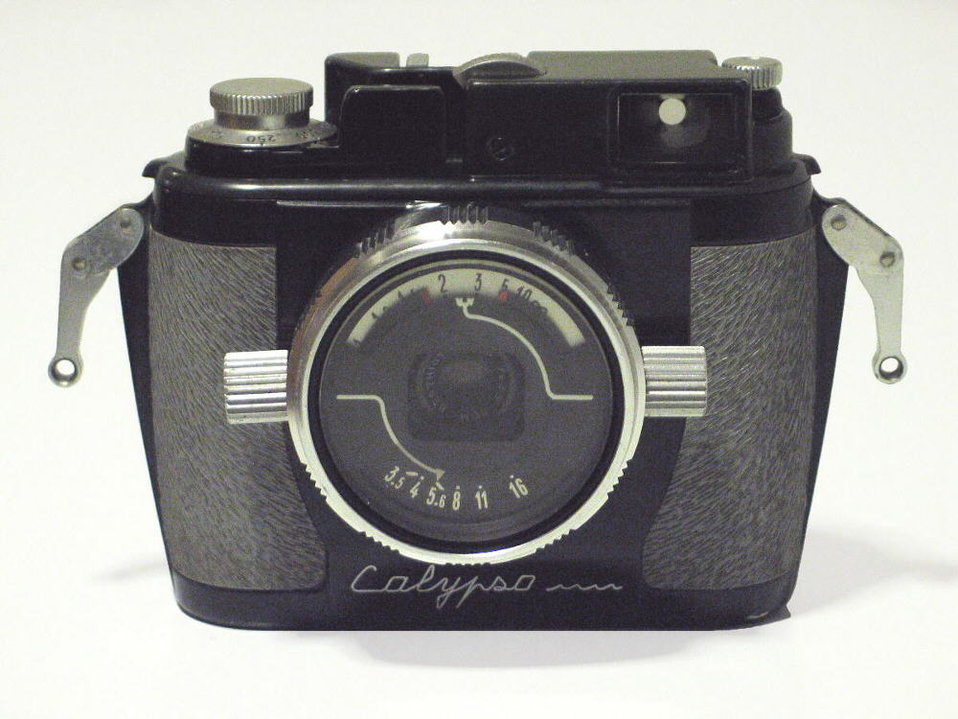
Calypso camera